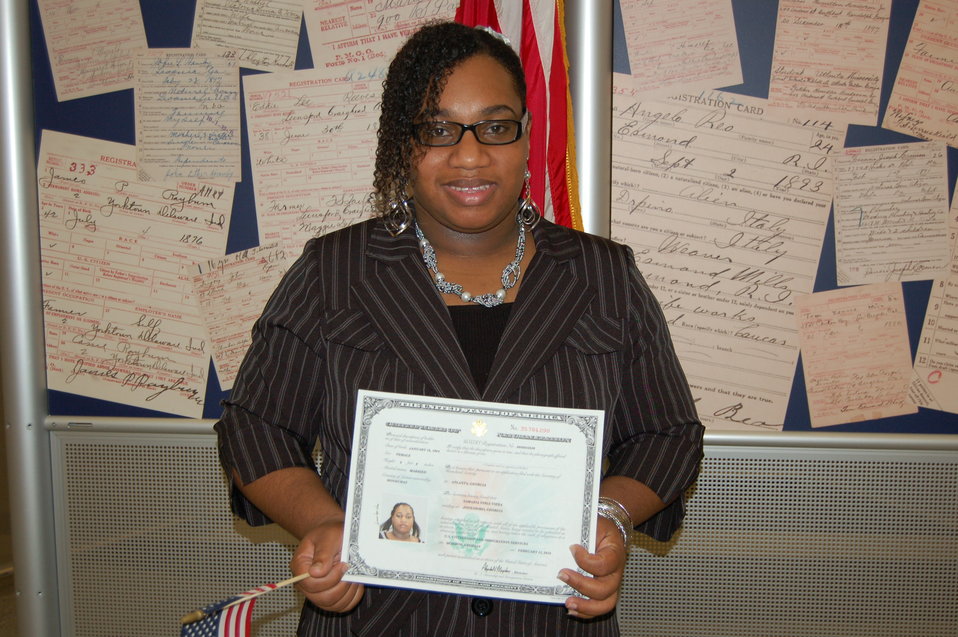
New Citizens